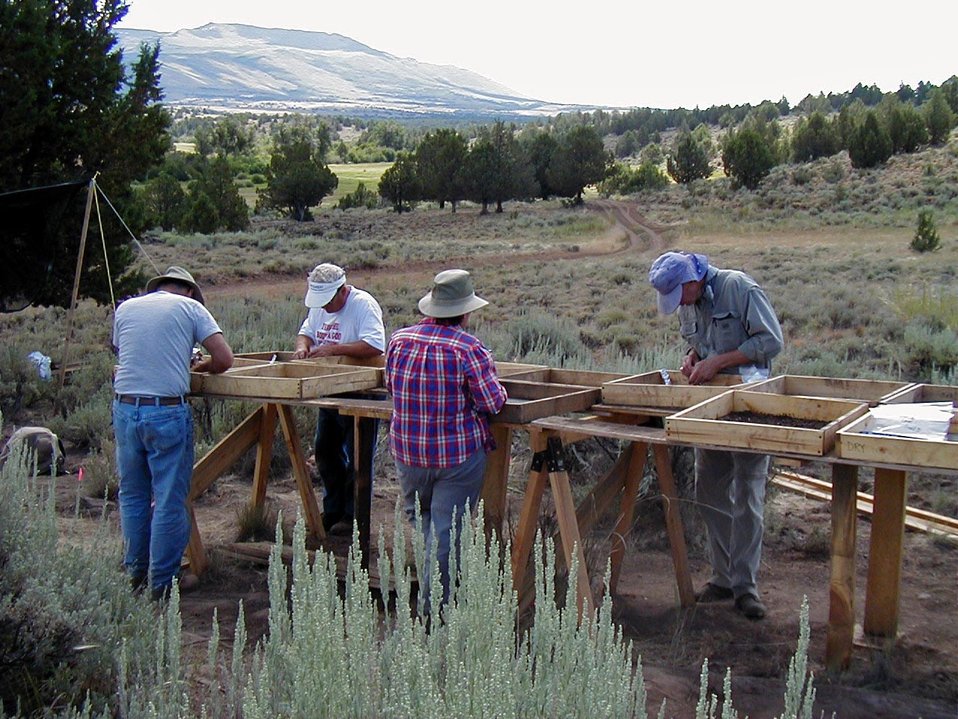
Oregon Archaeological Society and other volunteers have contributed thousands of hours of labor to on-going archaeological work at Burns BLM sites.